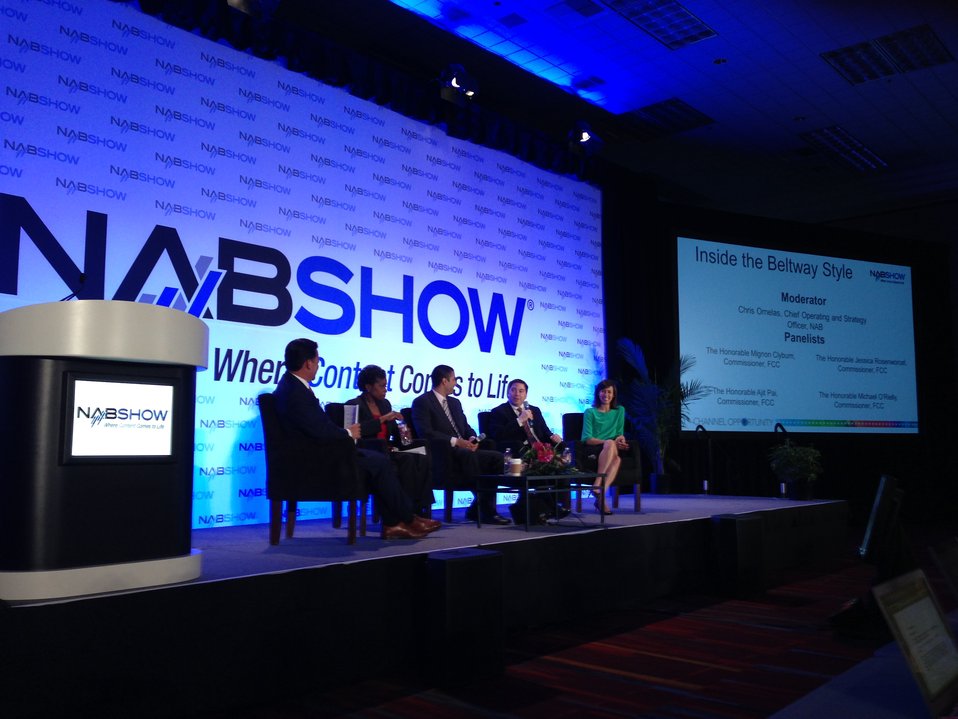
4.08.2014 NAB Show

FCC Commissioners' Panel 'Inside the Beltway' 4/8/14
2014 NAB Show